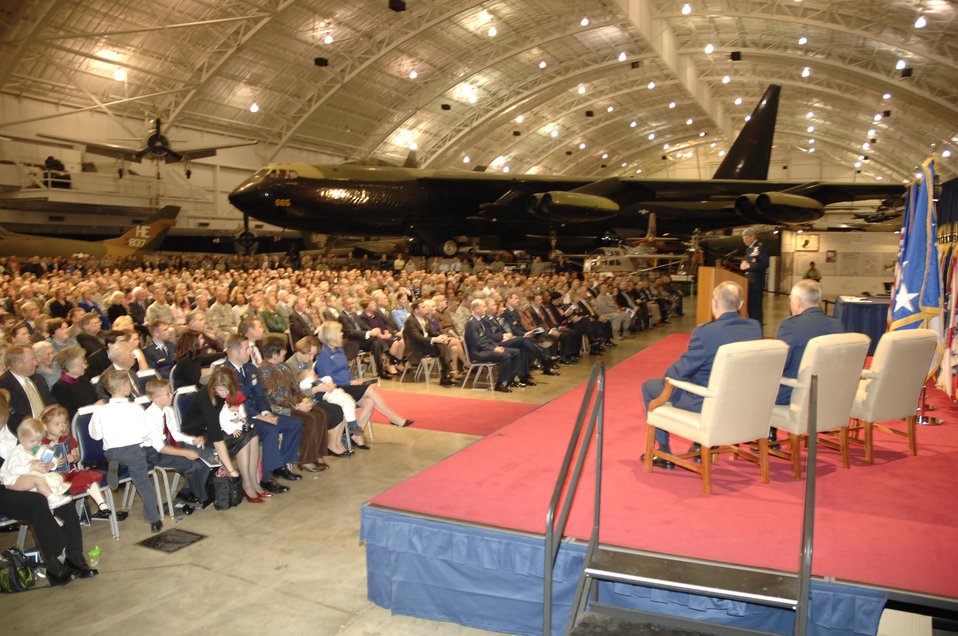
AFMC change of command

A B-52 Stratofortress stands silent guard behind the crowd gathered for a change of command ceremony Nov. 21 in the Modern Flight Gallery of the National Museum of the United States Air Force at Wright-Patterson Air Force Base, Ohio. The ceremony, which is steeped in military history and tradition, marked the passing of leadership of Air Force Materiel Command from Gen. Bruce Carlson to Gen. Donald Hoffman. As AFMC commander, is responsible for providing the acquisition management services and logistics support required to develop, procure and sustain Air Force weapon systems.